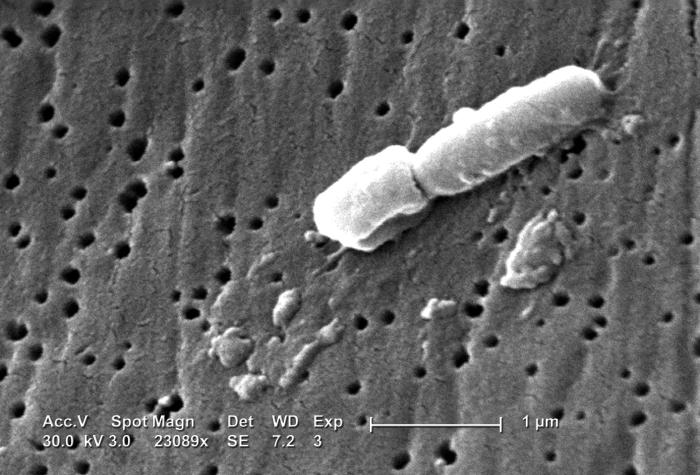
This scanning electron micrograph (SEM) revealed some of the ultrastructural morphologic features of a Klebsiella pneumoniae bacterium.